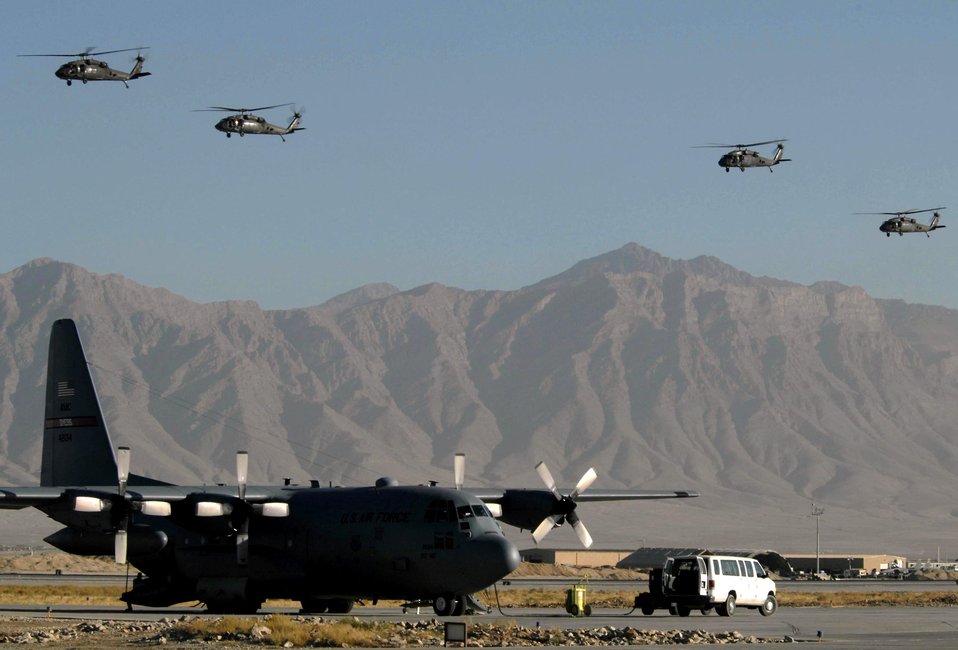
Keeping supplies moving

Army UH-60 Blackhawk helicopters fly over a C-130 Hercules at Bagram Air Base, Afghanistan, as it prepares for a mission Sept. 24. C-130s are essential to getting mission-critical supplies to the joint fighters supporting the war on terrorism.